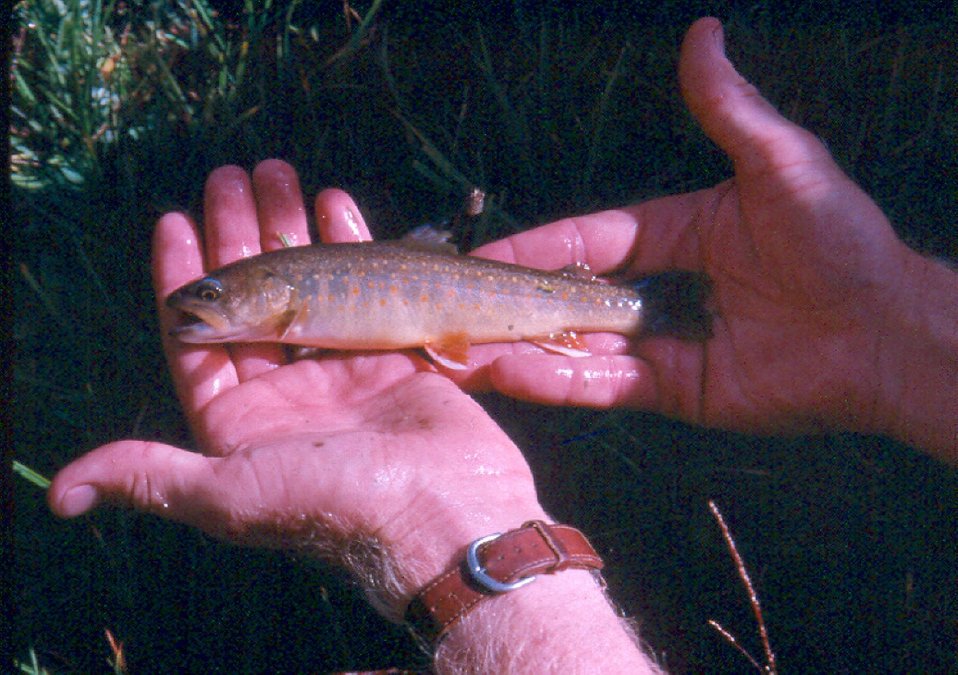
Bull Trout Salmon Field Office UCSC Upper Columbia Salmon Clearwater District